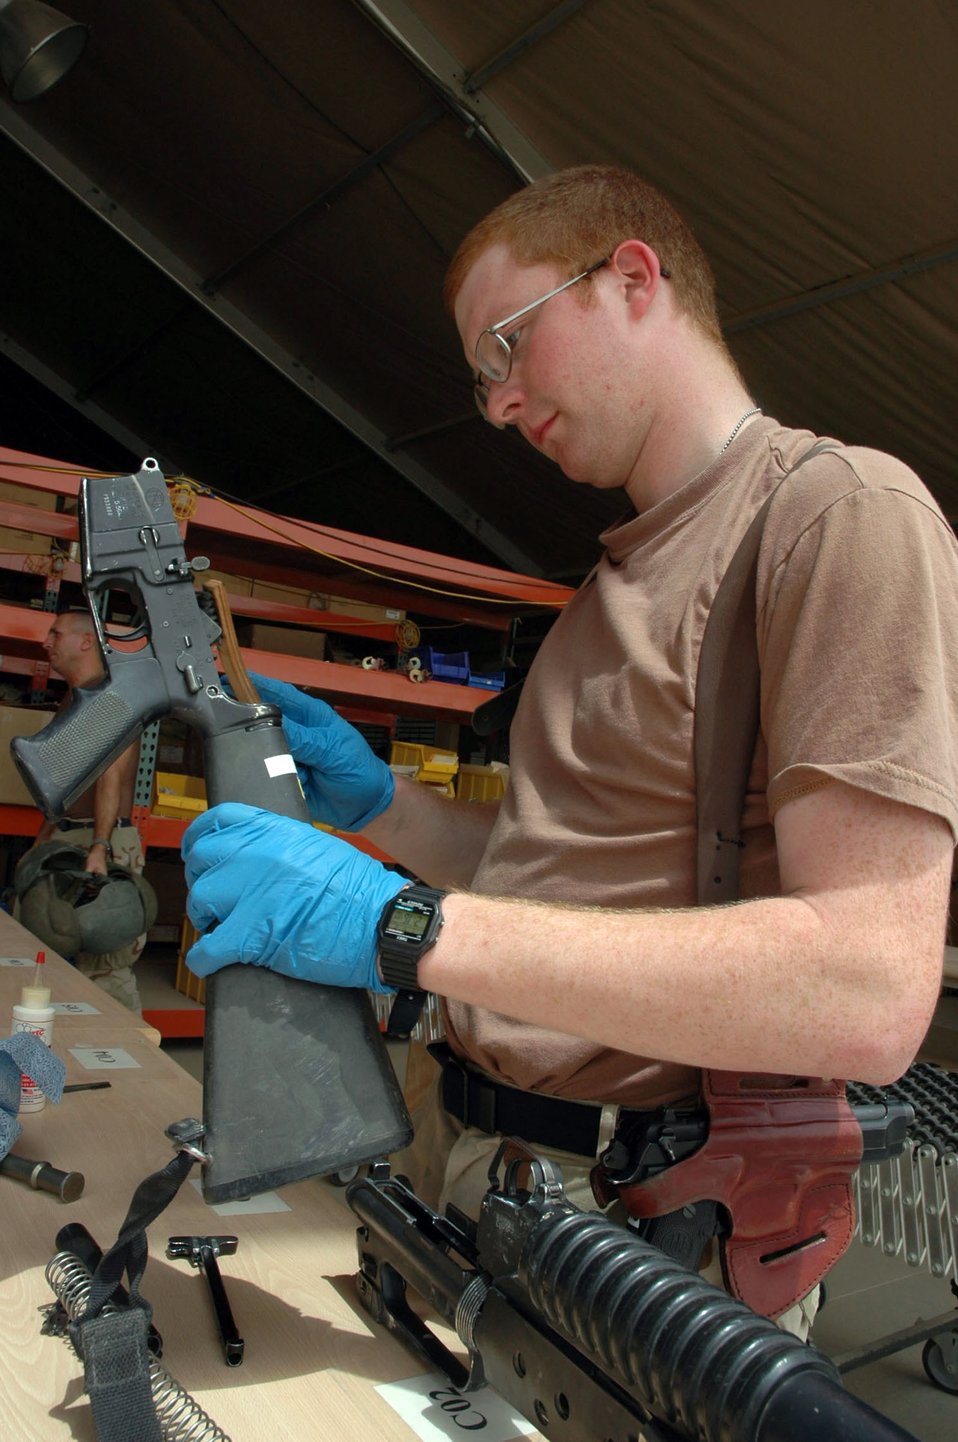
Logistics Airmen supply customers with team effort

BAGHDAD, Iraq -- Airman 1st Class Paul Brotherton ensures customers are armed with clean and serviceable weapons and ammunition. Weapons stored in the armory here are disassembled and cleaned and the ammunition is checked for cracks and warping every two weeks. Airman Brotherton is assigned to the 447th Expeditionary Logistics Readiness Squadron and is deployed from Kadena Air Base, Japan.